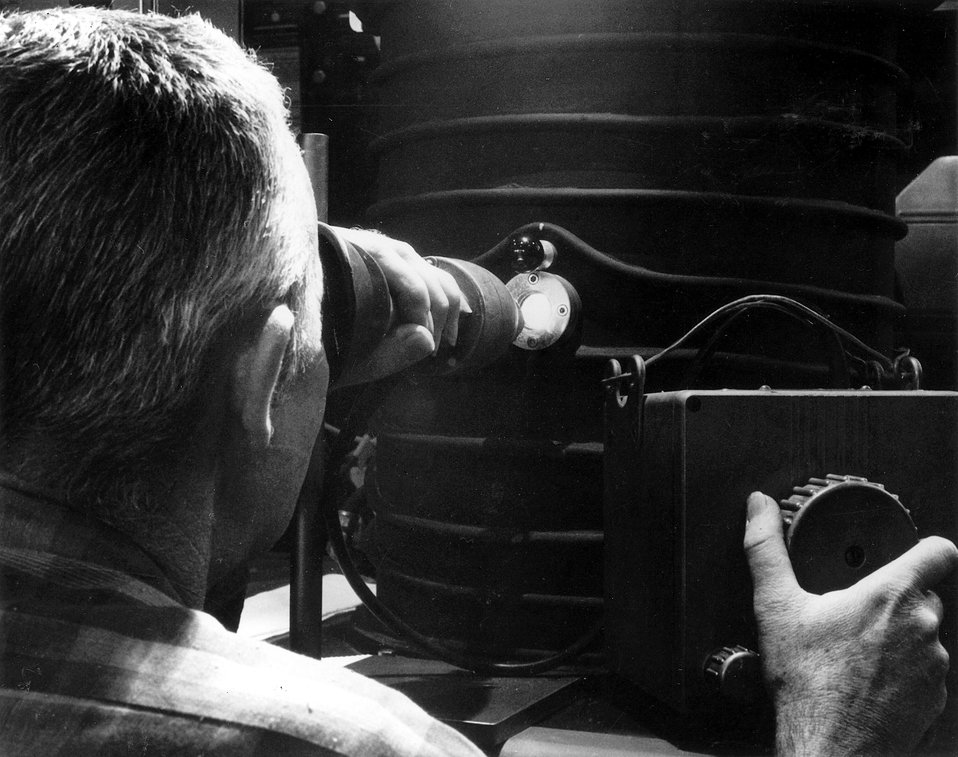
A new generation of reactor instrumentation is under development at Argonne.
c.1970